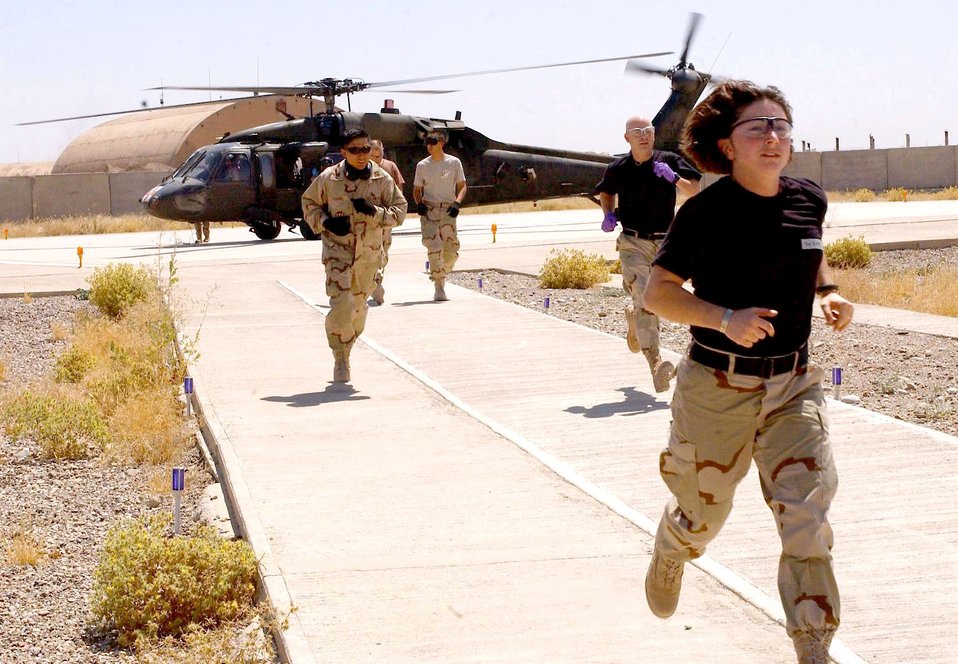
Medical Evacuation

Airmen with the 506th Expeditionary Medical Group at Kirkuk Air Base, Iraq, run to get a patient to load onto an Army UH-60 Black Hawk for medical evacuation on Wednesday, June 21.